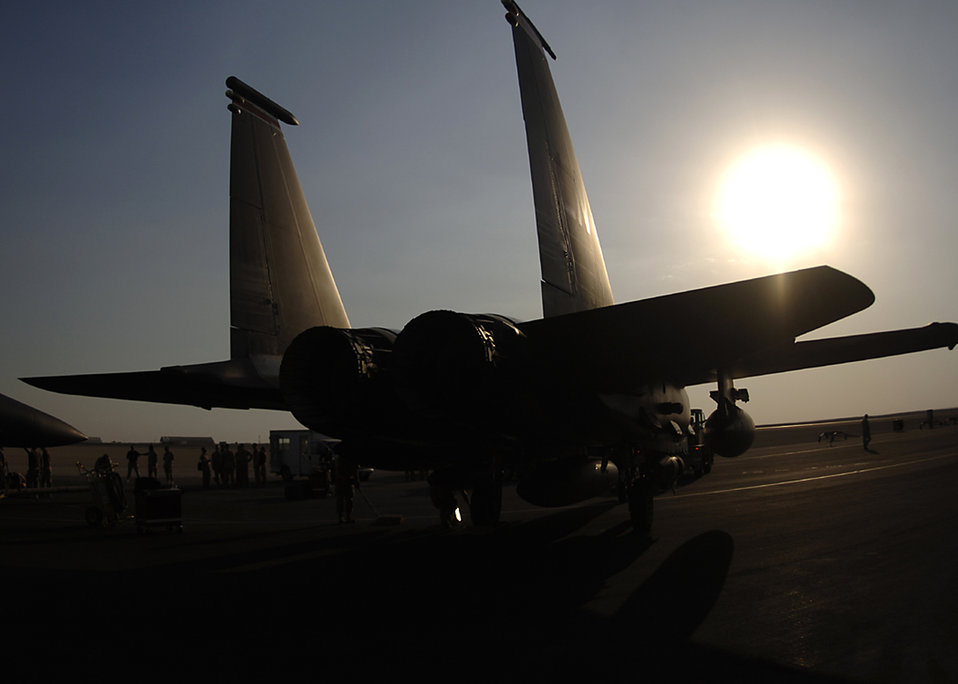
May 11-12 airpower: F-15Es hit insurgent compound

An F-15E Strike Eagle awaits its next mission in Southwest Asia. The F-15E's low-altitude navigation and targeting infrared for night, or LANTIRN, system allows the aircraft to fly at low altitudes, at night and in any weather conditions, to attack ground targets with a variety of precision-guided and unguided weapons.